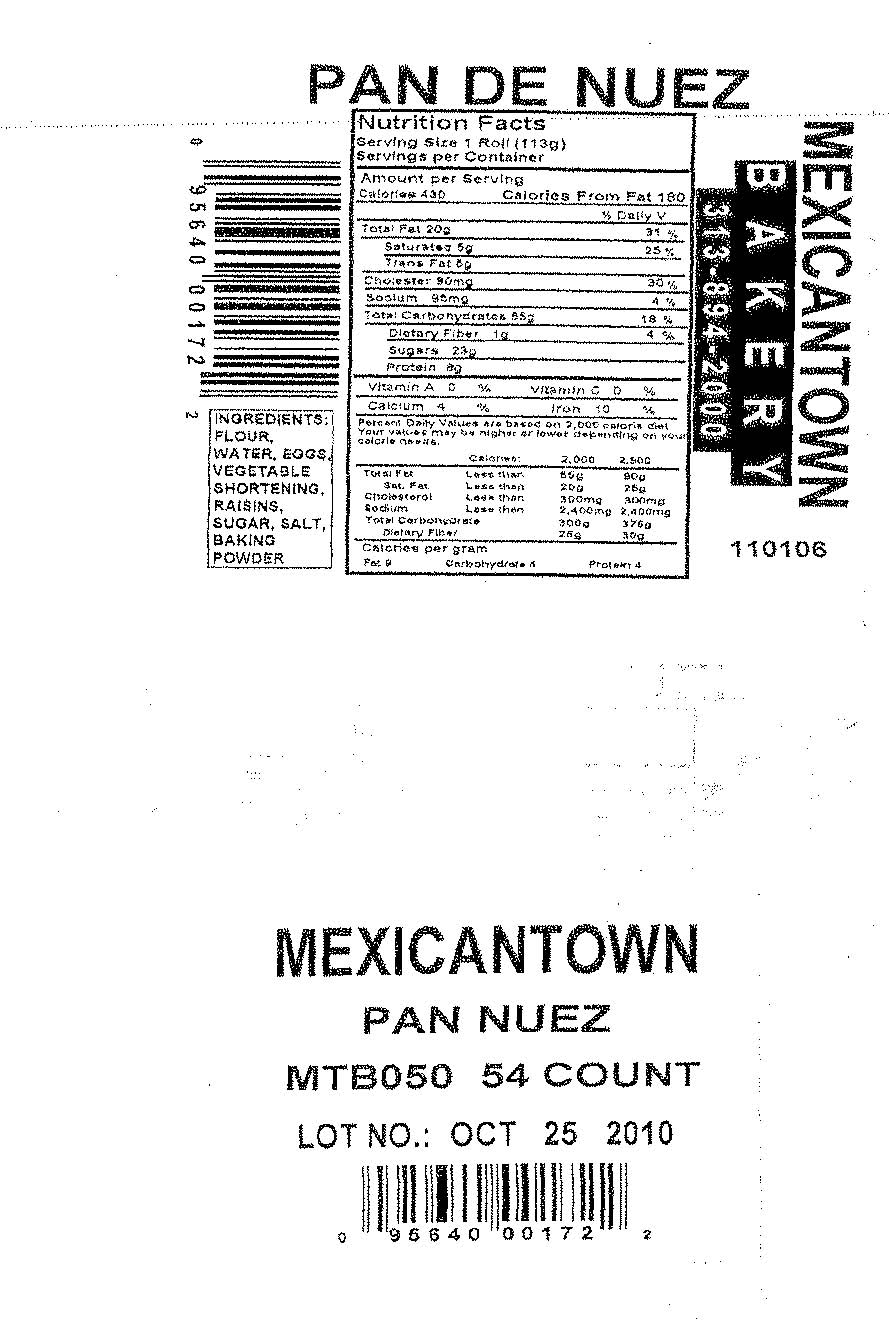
RECALLED - Mexicantown Pan De Nuez

April 7, 2011 - Product Recall - Mexicantown Whole Issues Allergy Alert On Undeclared Pecans In Pan Nuez And Undeclared Milk In Magdalena, Pan De Maiz, YoyoPan Nuez, And Tacos De Pan Danes.